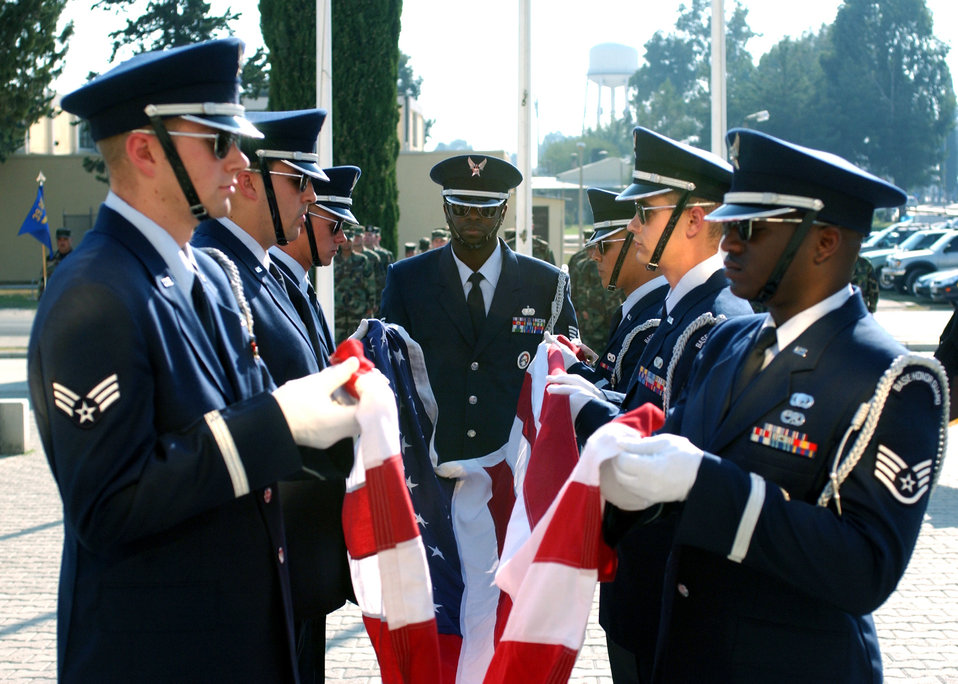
Remembering those who served

INCIRLIK AIR BASE, Turkey -- Members of the 39th Air Base Honor Guard fold the American flag during the Prisoners of War or Missing in Action retreat ceremony here Sept. 14. The ceremony honored the Airman, Seaman, Marines and Soldiers who were POWs or MIAs during every American war since World War I.